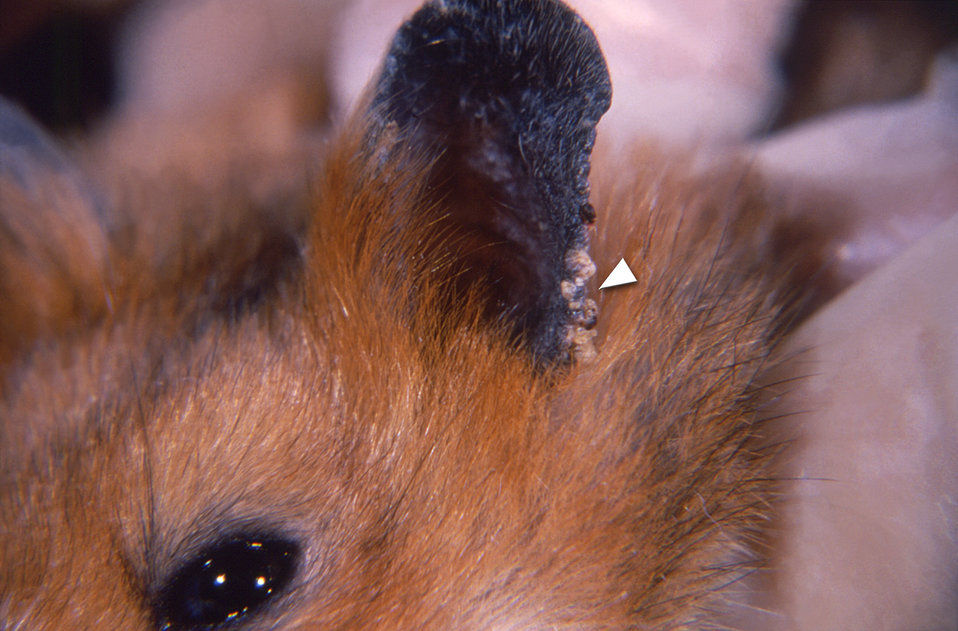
This unknown specie of hamster was infected with two pathologic entities, Leishmaniasis brasiliensis, and an unknown specie of ear mite from the genus Notoedres.